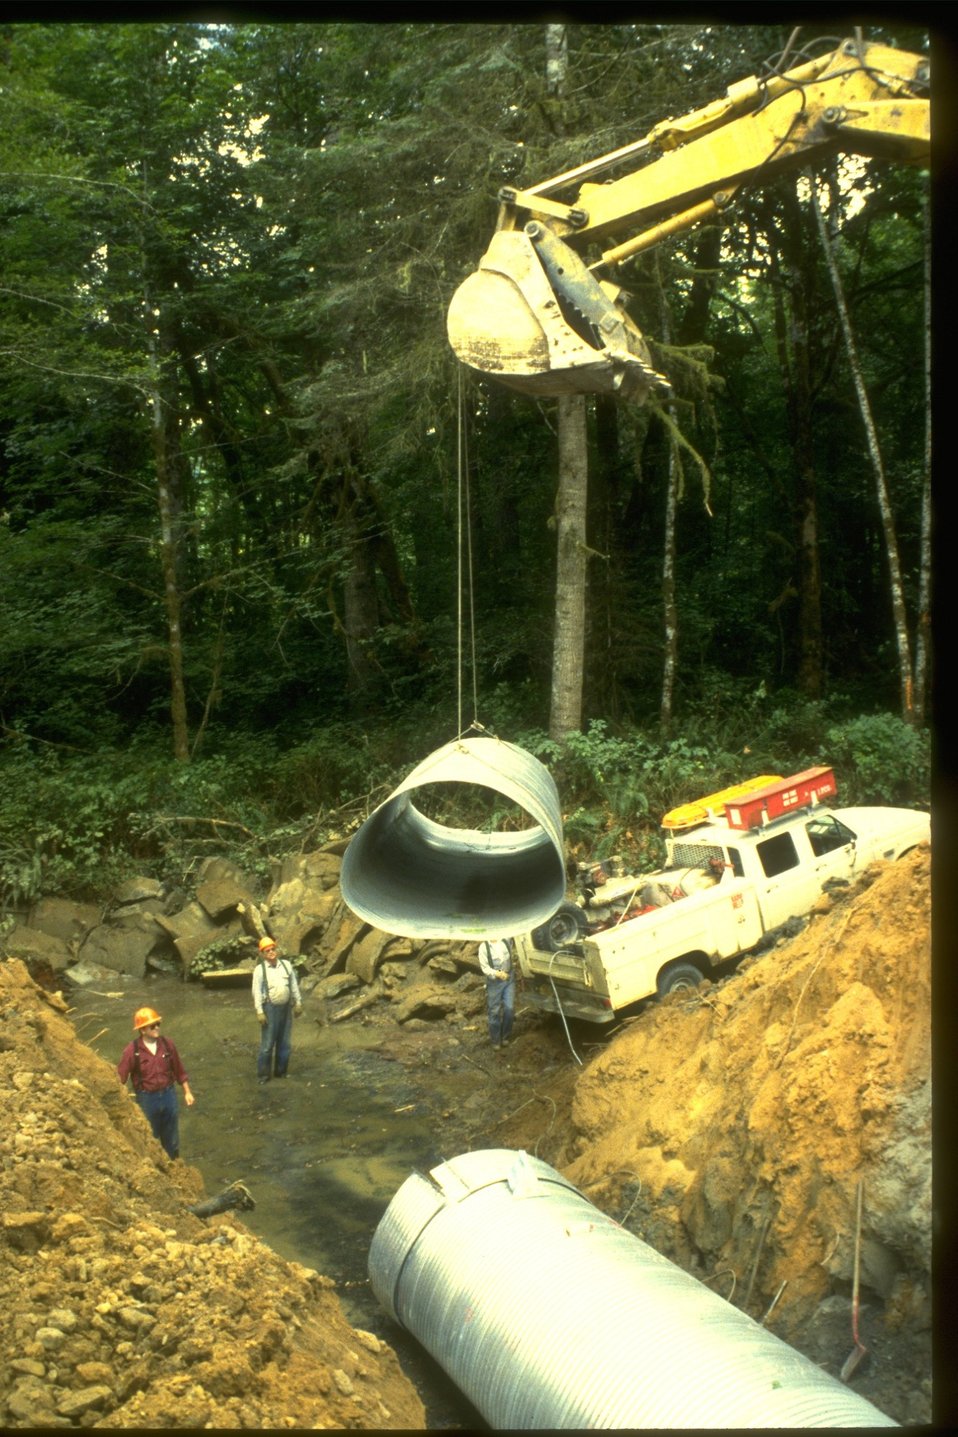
Culvert placements through a Jobs in the Woods contract.